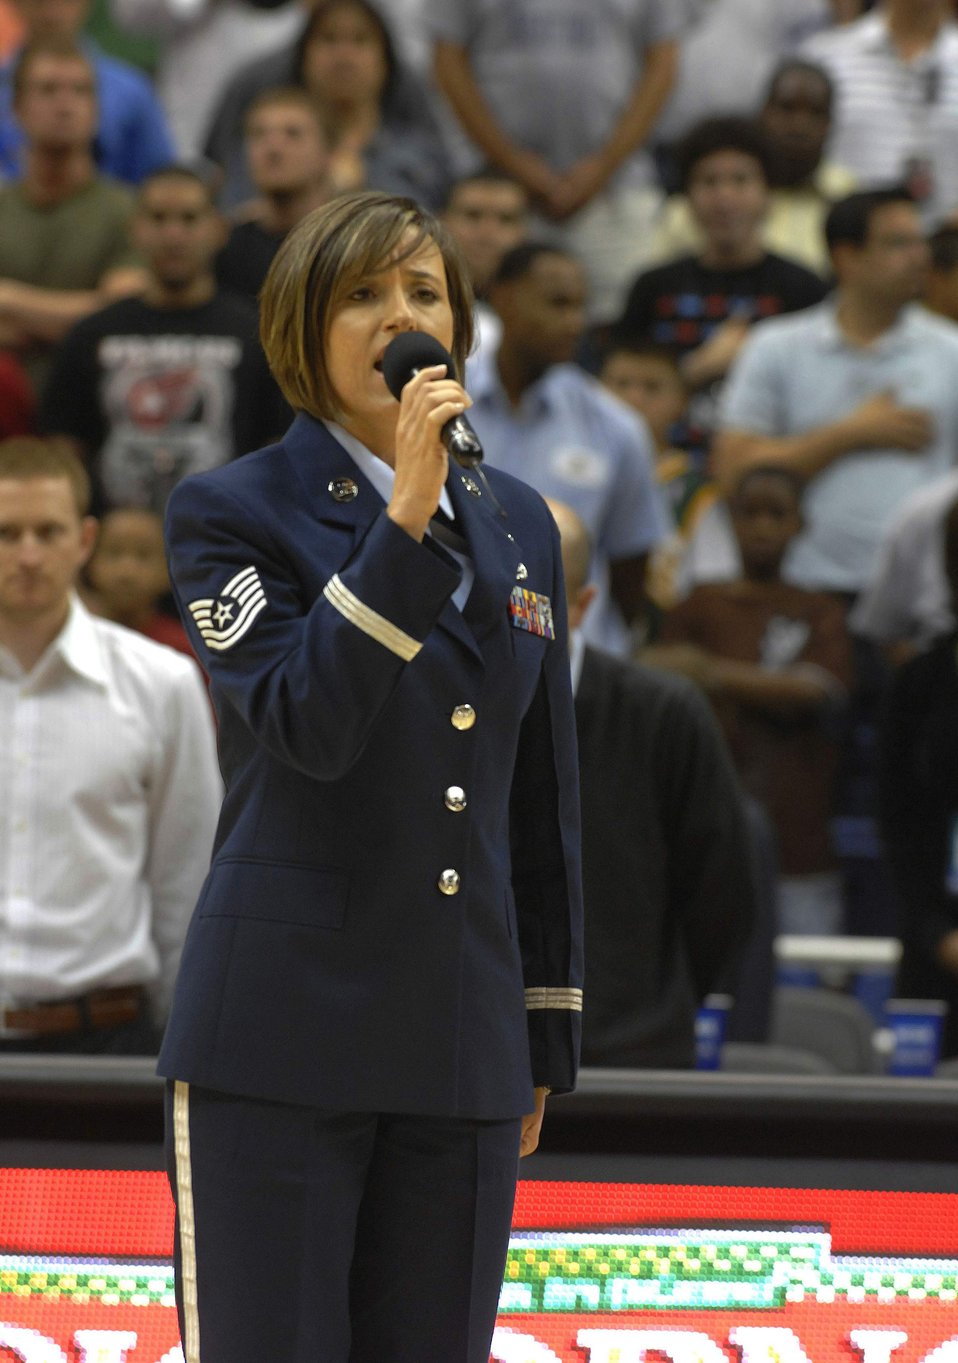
NCAA Final Four recognizes American servicemembers

Tech. Sgt. Donna Siler sings the national anthem before the start of the College All-Star Basketball Game during the festivities leading up to the Final Four April 4 in San Antonio, Texas. Sergeant Siler is a vocalist for the Band of the West from Lackland Air Force Base, Texas.